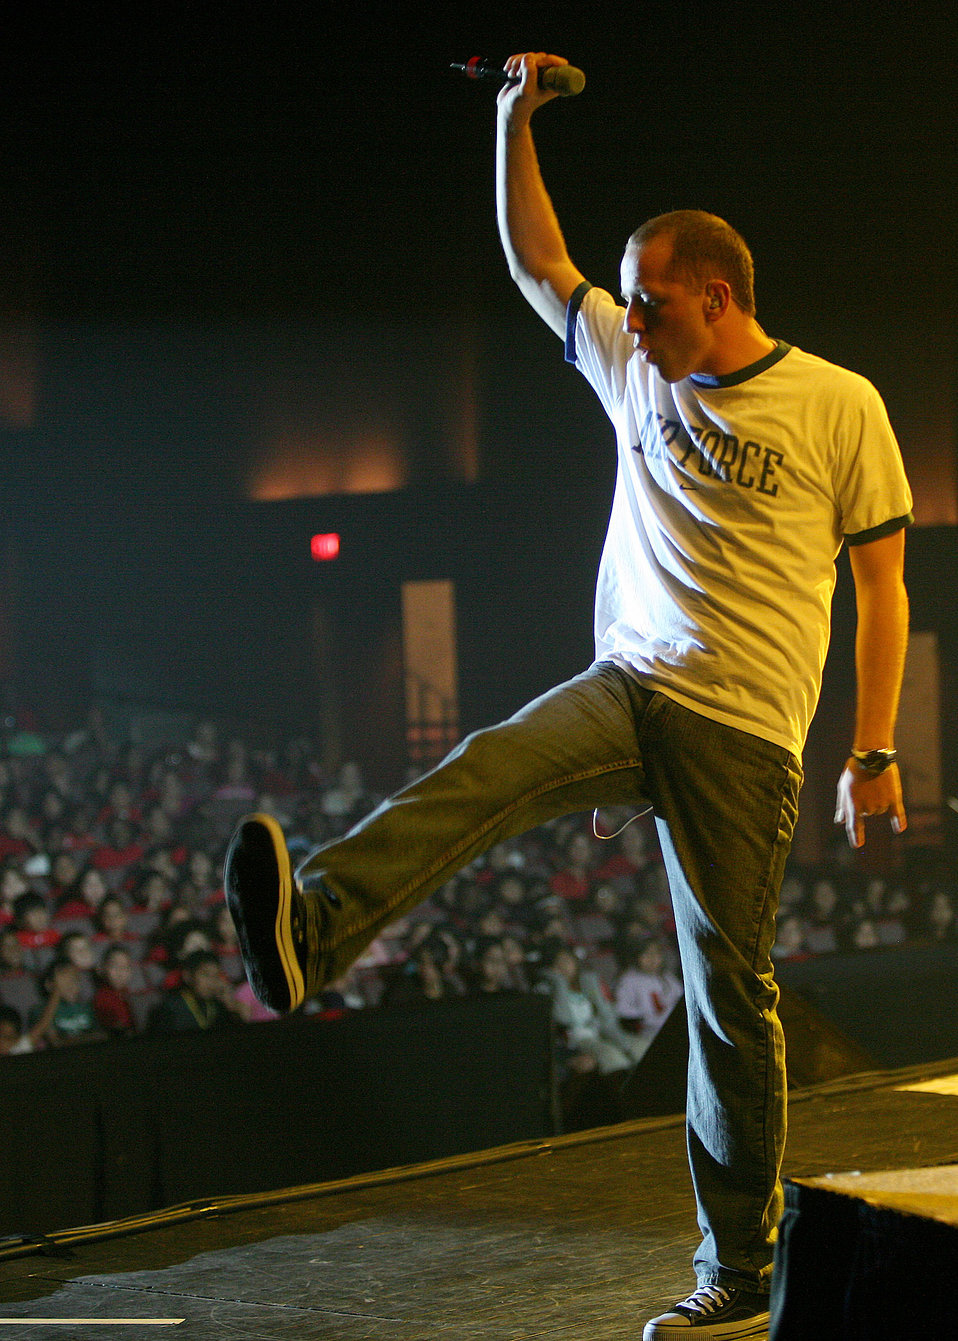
Air Force band rocks for Red Ribbon Week

Airman 1st Class Clayton Lee, a vocalist with Top Flight puts the finishing touches on a musical number while performing for 2,500 middle school children Oct. 22 at the Lila Cockrell Theater in San Antonio. Top Flight performed four shows in support of Red Ribbon Week, a national observance to raise awareness in youth to make the right decisions about substance abuse and inform them on the dangers of drugs. Top Flight is the popular music ensemble of the Air Force Band of the West from nearby Lackland Air Force Base.